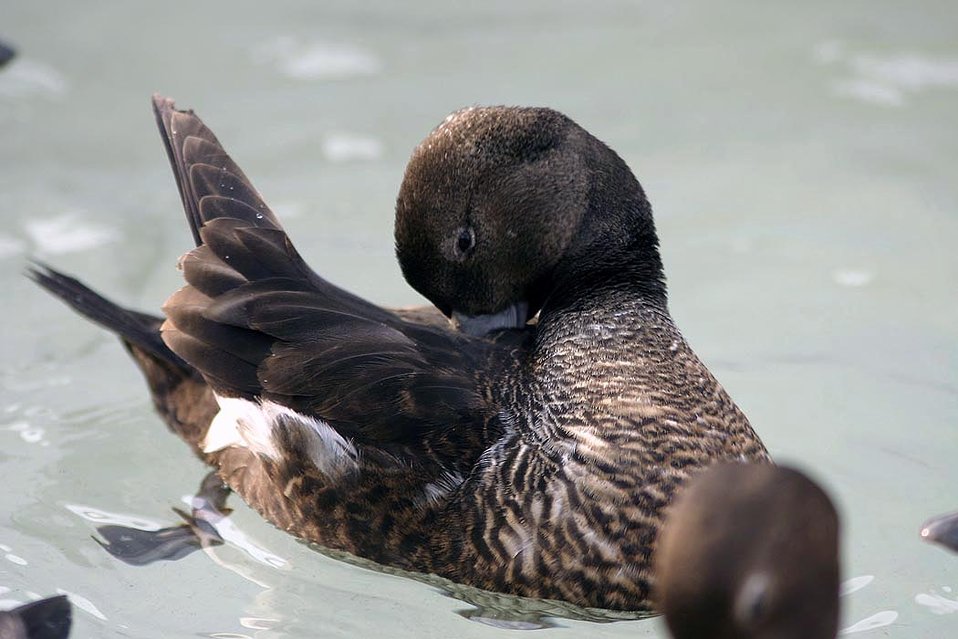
Threatened Steller's eider (Polysticta stelleri) female, Alaska SeaLife Center, Seward, Alaska